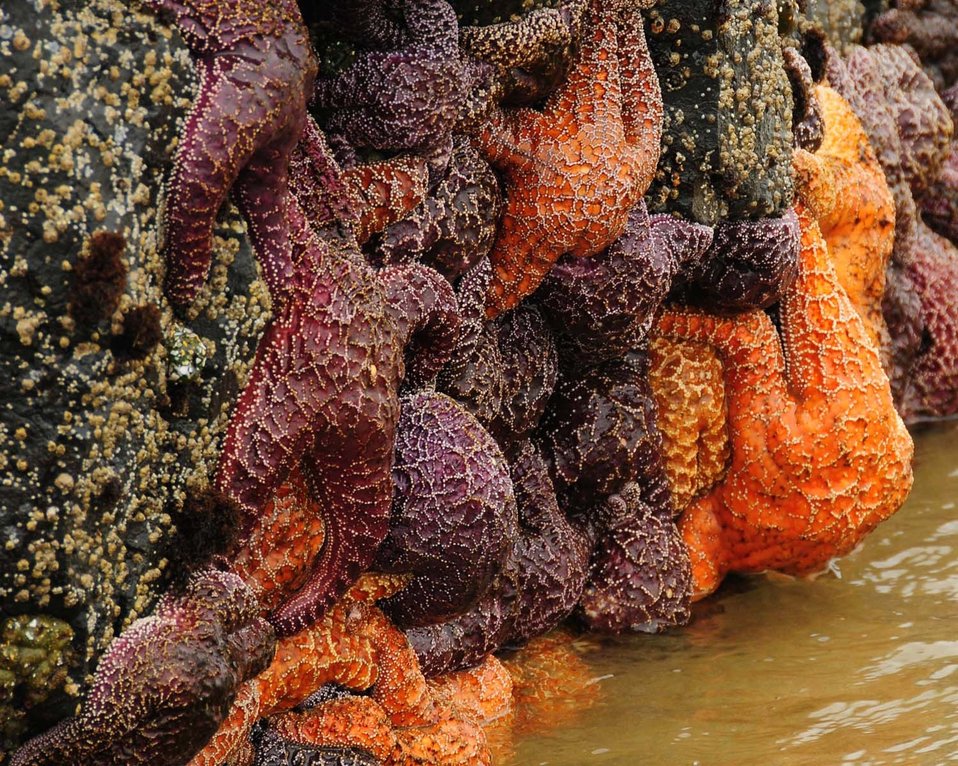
Sea stars, Oregon Islands NWR

Sea stars (starfish) cling to a rock face on Oregon Islands National Wildlife Refuge.